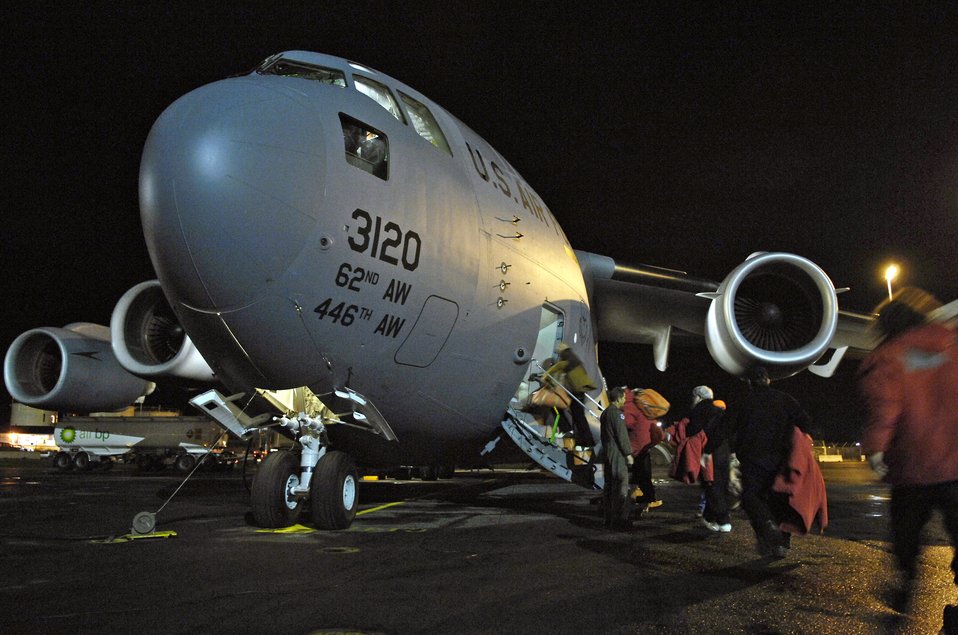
Off to the South Pole

Members of the National Science Foundation load on to a C-17 Globemaster III for a winter fly-in mission for Operation Deep Freeze Aug. 20 at Christchurch, New Zealand. A C-17 Globemaster III and 31 Airmen from McChord Air Force Base, Wash., are flying in an augmentation of scientists, support staff, food and equipment for the U.S. Antarctic Program at McMurdo Station.